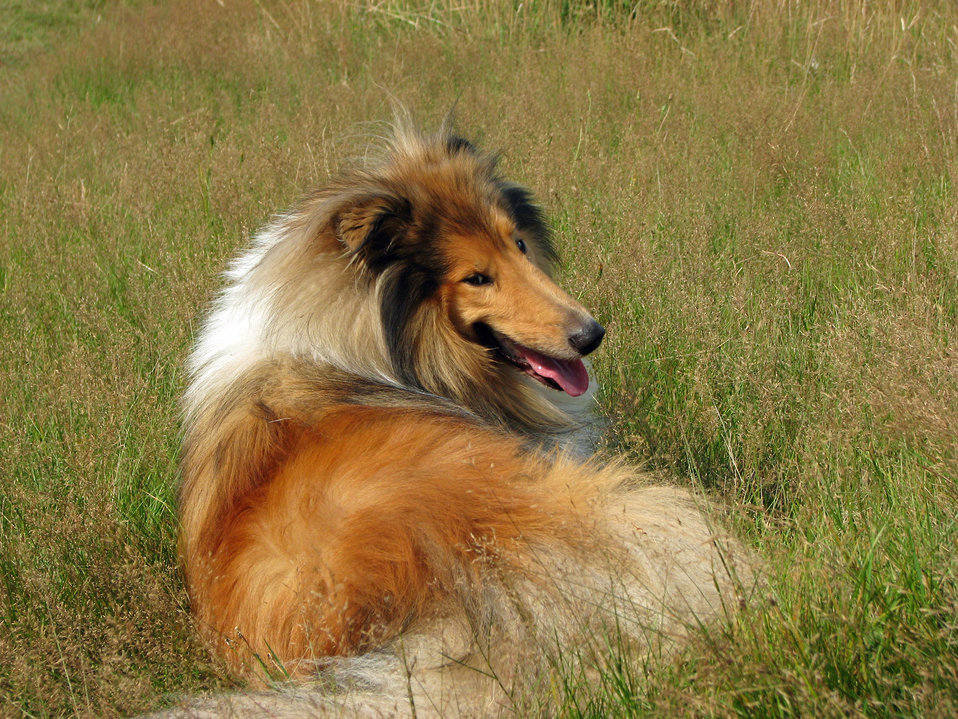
Rough collie dog laying in the grass.